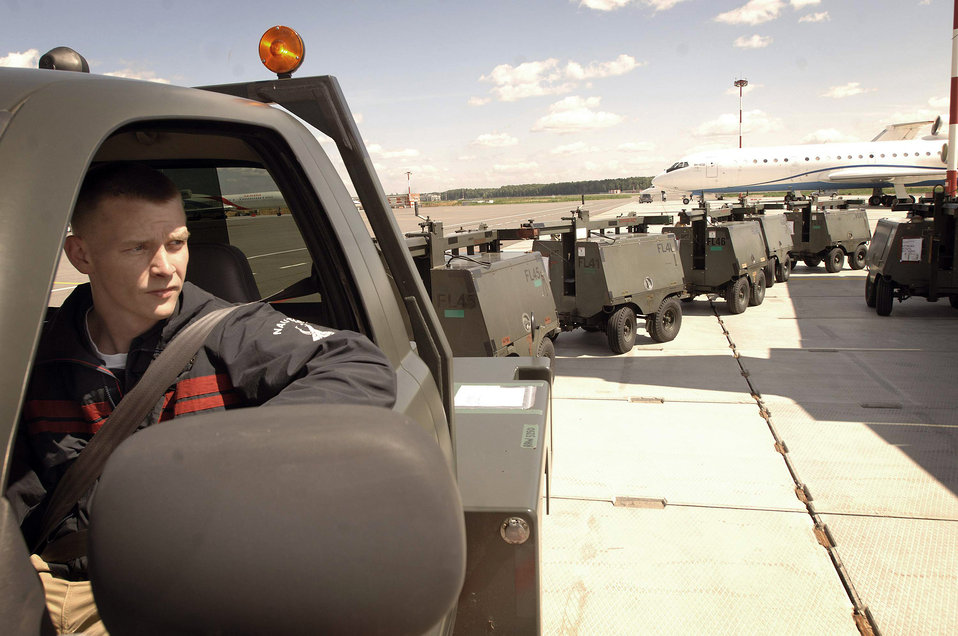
Airmen provide presidential support in Moscow

Staff Sgt. Andrew Bowman prepares to tow portable light carts to a temporary storage facility July 3 at Moscow's Vnukovo International Airport in Russia. The equipment delivered from Ramstein Air Base, Germany, is in preparation for President Barack Obama's visit to Russia. Sergeant Bowman is an aerial transporter assigned to the 86th Contingency Response Group at Sembach Air Base, Germany.